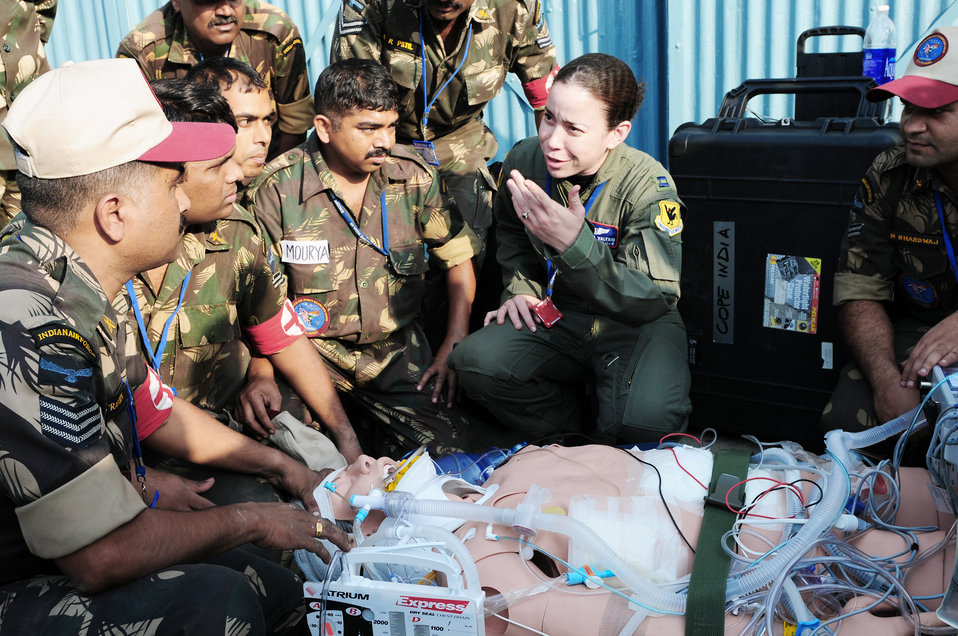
Cope India dubbed a success

Capt. Veronica Valerio explains emergency response techniques to several Indian air force medics during Cope India at Air Force Station Agra, India, Oct. 22, 2009. Captain Valerio is from the 18th Wing at Kadena Air Base, Japan. Cope India is a United States and India airlift exercise that provides training for humanitarian assistance and disaster relief operations.